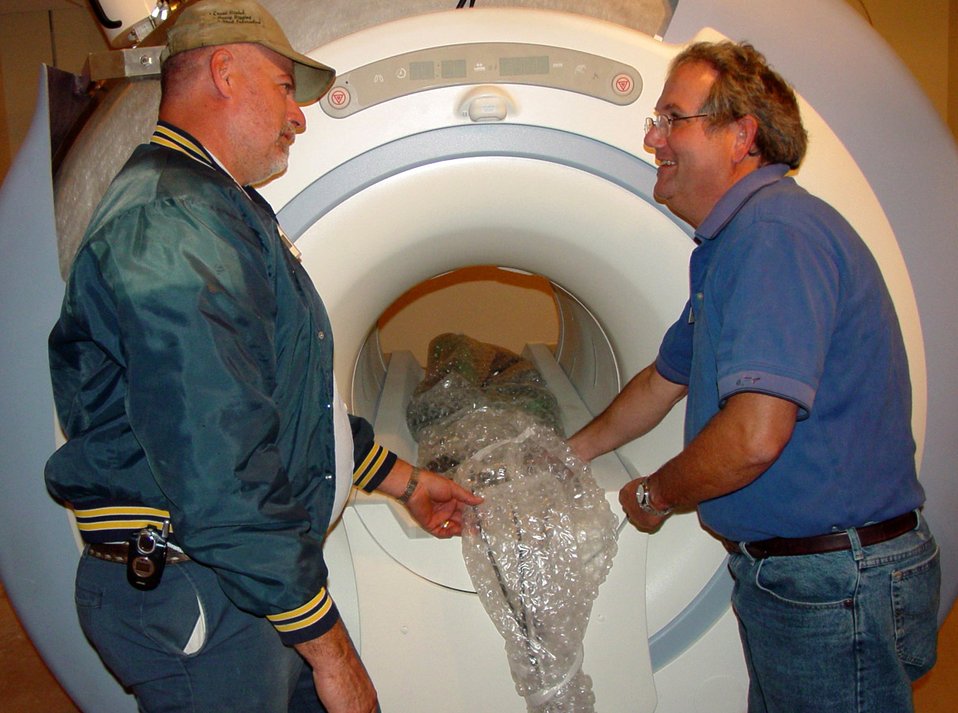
New MRI system installed at Keesler Medical Center

Gary Chambliss and Michael Alexander discuss the project to install Keesler Medical Center's new magnetic resonance imaging system Dec. 7 at Keesler Air Force Base, Miss. Caffey, Inc., crews look to install and have the system up and running in January, about half the time it normally takes to install similar equipment. Mr. Chambliss is superintendent for Caffey, Inc. Mr. Alexander is project manager for installations for General Electric Healthcare Technologies.